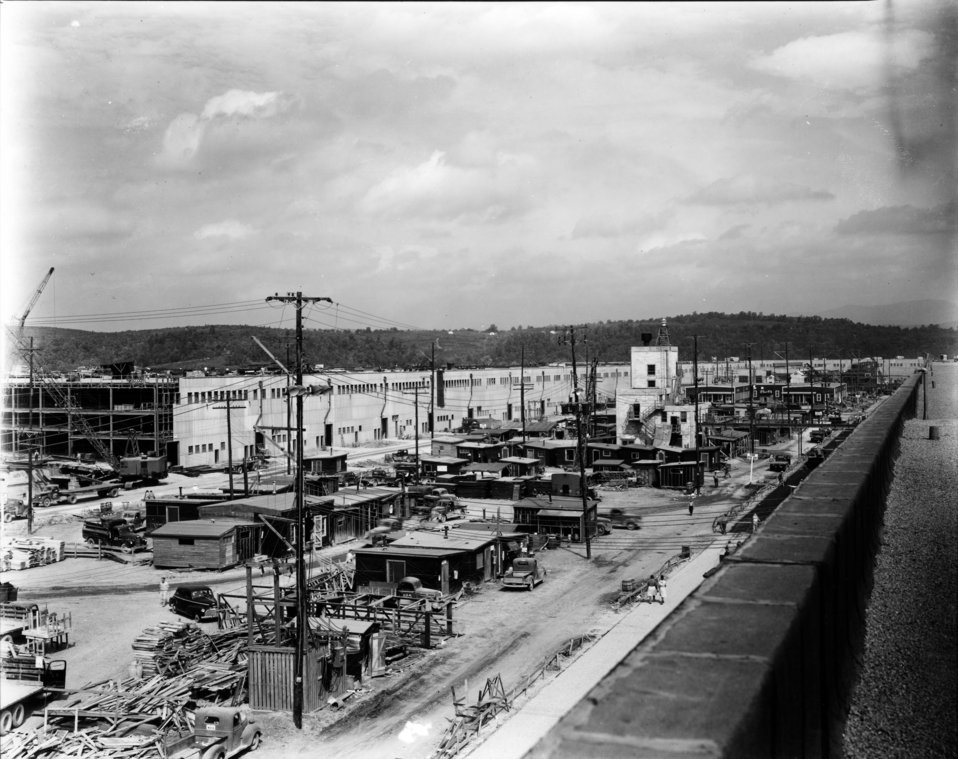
K-25 at Oak Ridge